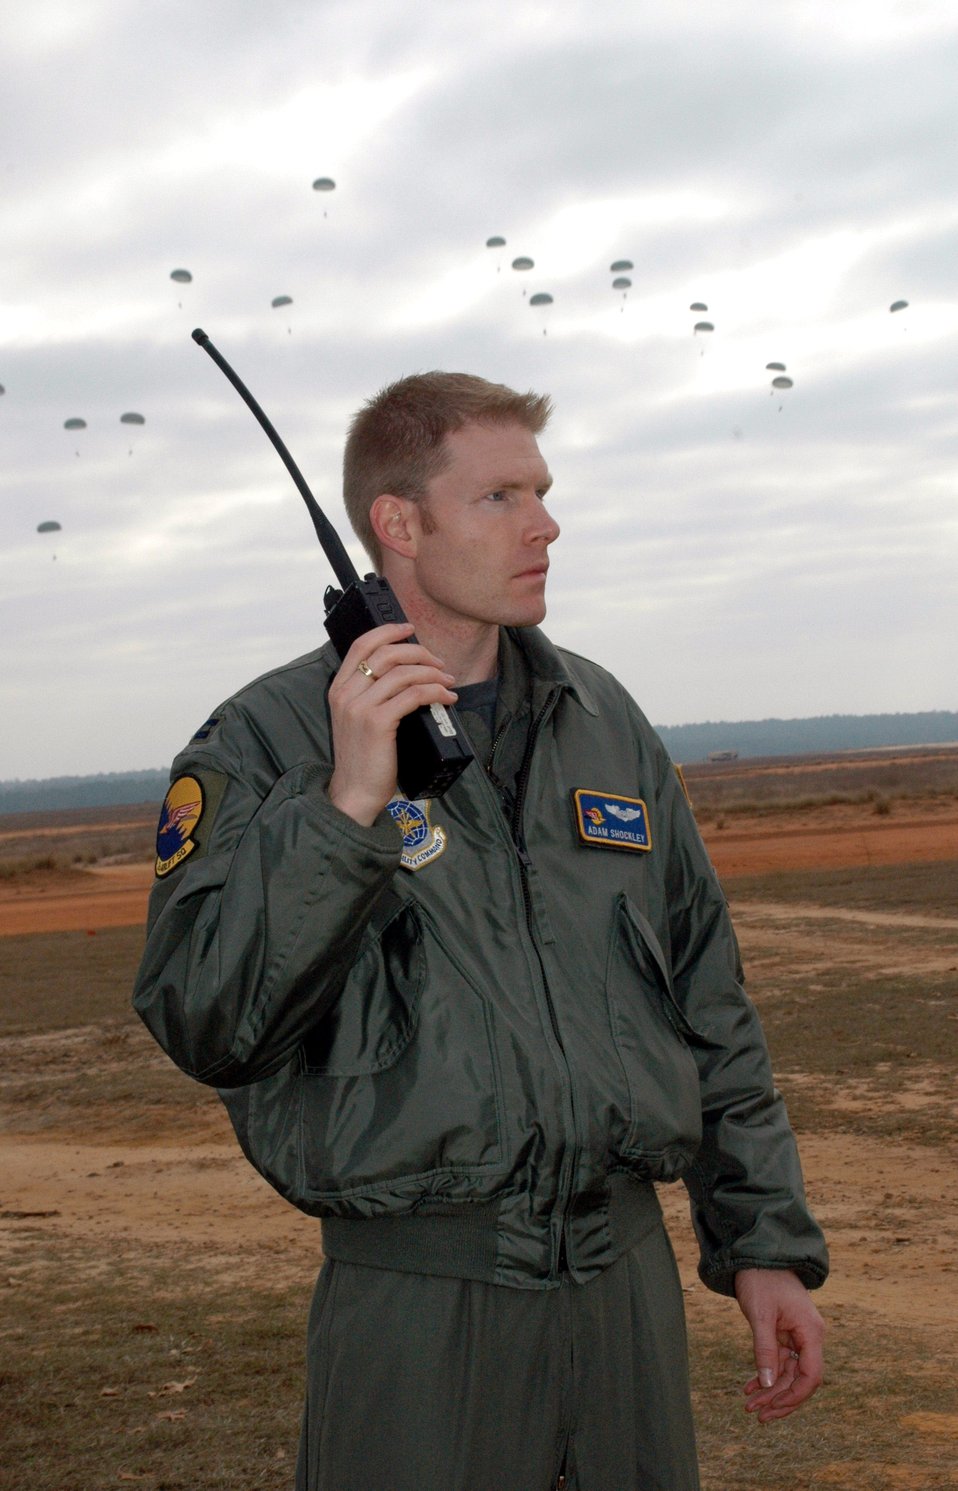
Operation Toy Drop brings international, U.S. military together

Capt. Adam Shockley calls from the ground Dec. 8 during Operation Toy Drop held at the Sicily Drop Zone at Fort Bragg, N.C. The Air Force Reserve Command's 440th Airlift Wing based at Pope Air Force Base, N.C., supported the combined joint exercise with C-130 Hercules airlift. More than 1,050 paratroopers jumped during the exercise. Captain Shockley is a navigator with the 43rd Airlift Wing at Fort Bragg.